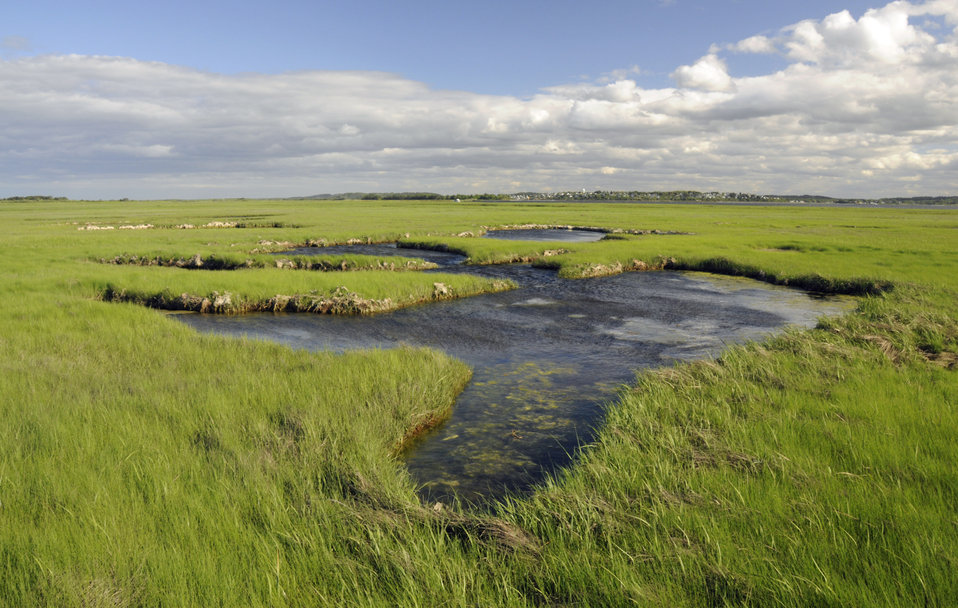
Salt marsh

Parker River National Wildlife Refuge, MA.